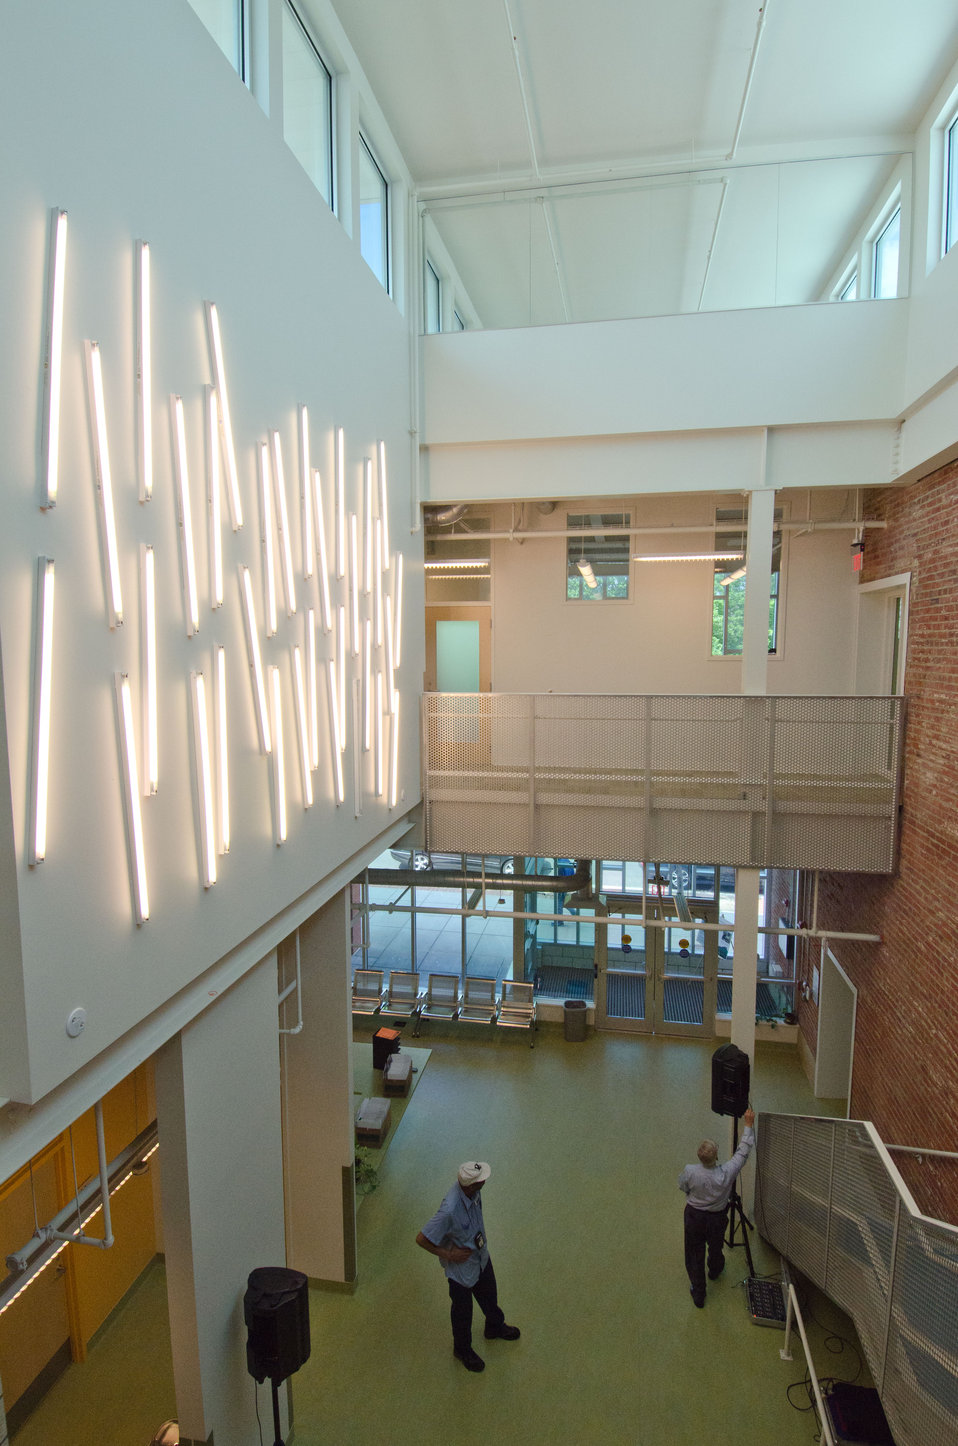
A view from the balcony into the stairwell, entrance and atrium of Bread for the City in northwest Washington, DC, on Friday, April 29, 2011.